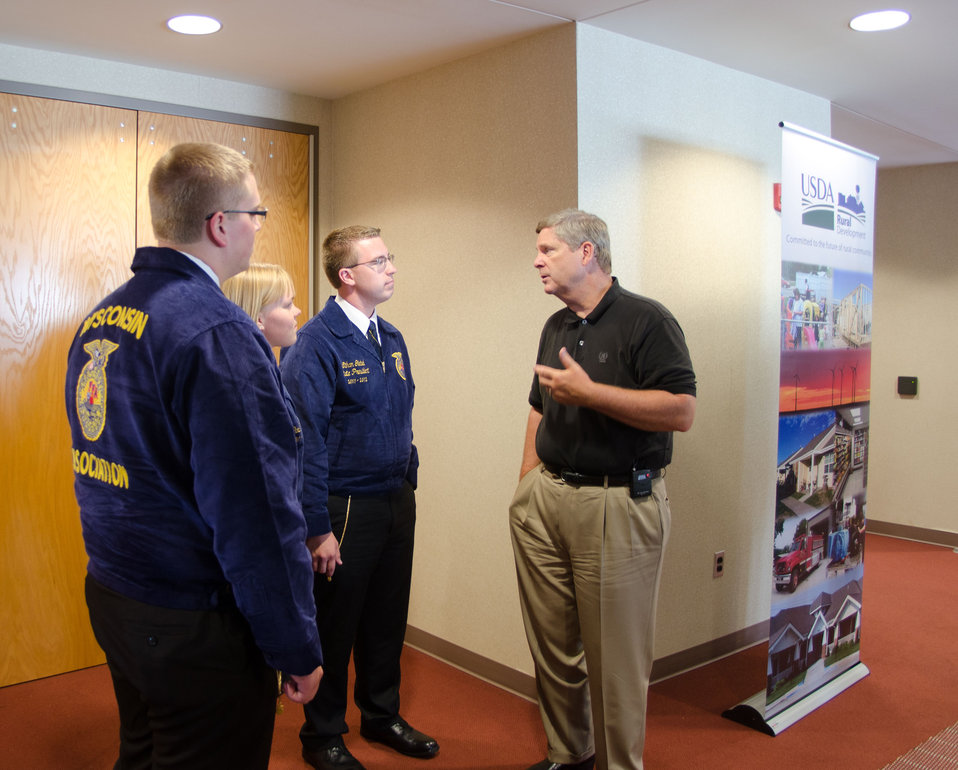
Agriculture Secretary Tom Vilsack speaking with members of theFuture Farmers of America (FFA) at the Wisconsin State Fair Grounds, Exposition Center in West Allis, WI, on Thursday, August 4, 2011.